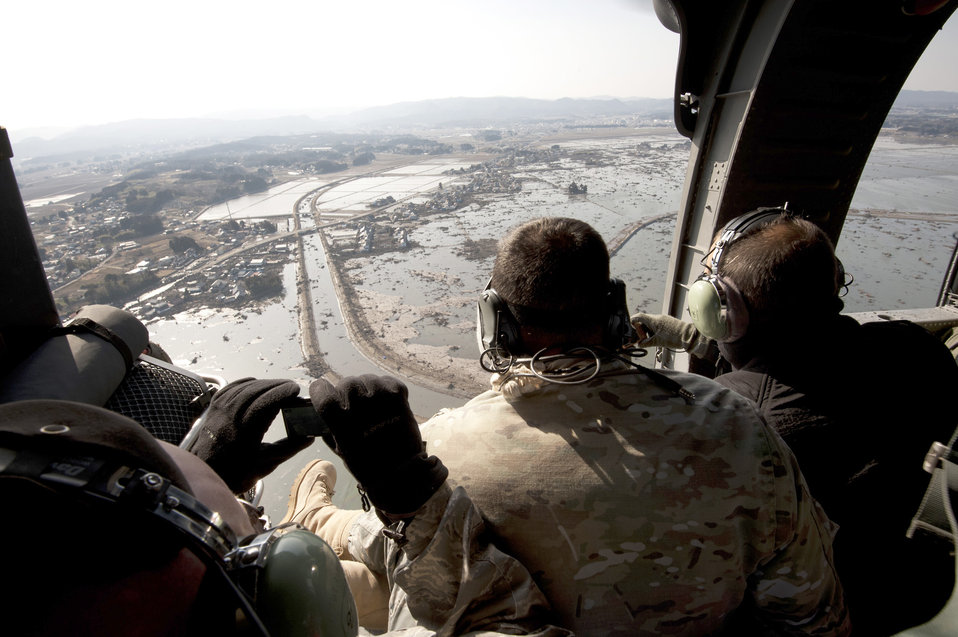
Japan's aftermath

A joint team of Airmen and Marines take photographs near the Sendai Airport, Japan, March 13, 2011, while surveying the aftermath of the 8.9-magnitude earthquake and subsequent tsunami that struck the region. The service members are search and rescue professionals assisting with Japan's earthquake and tsunami recovery effort.